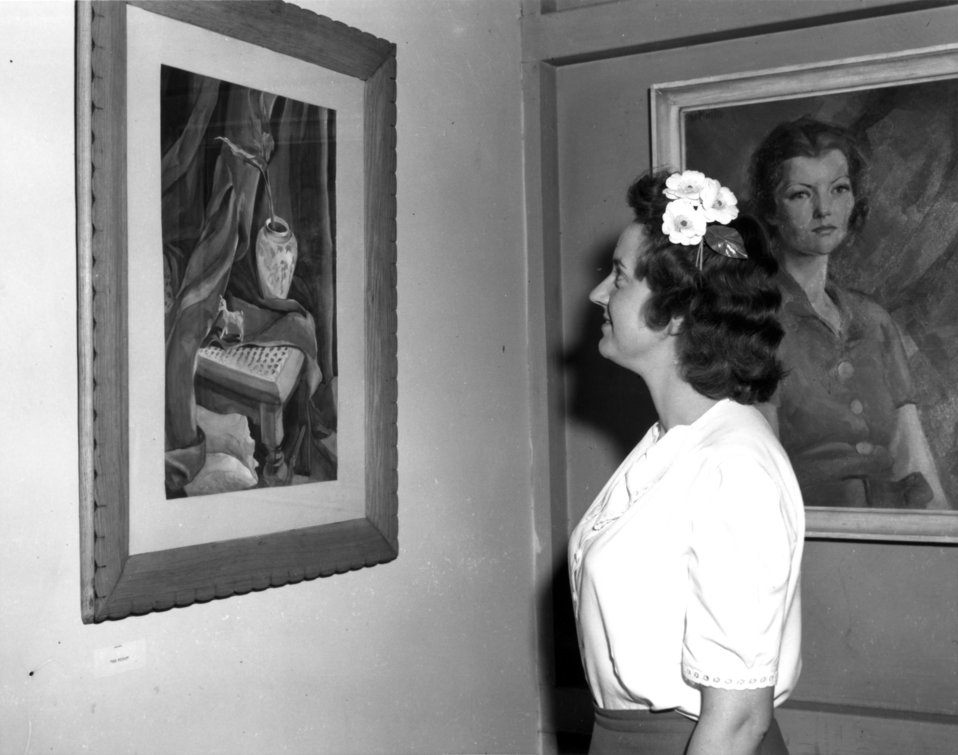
Recreation at Oak Ridge